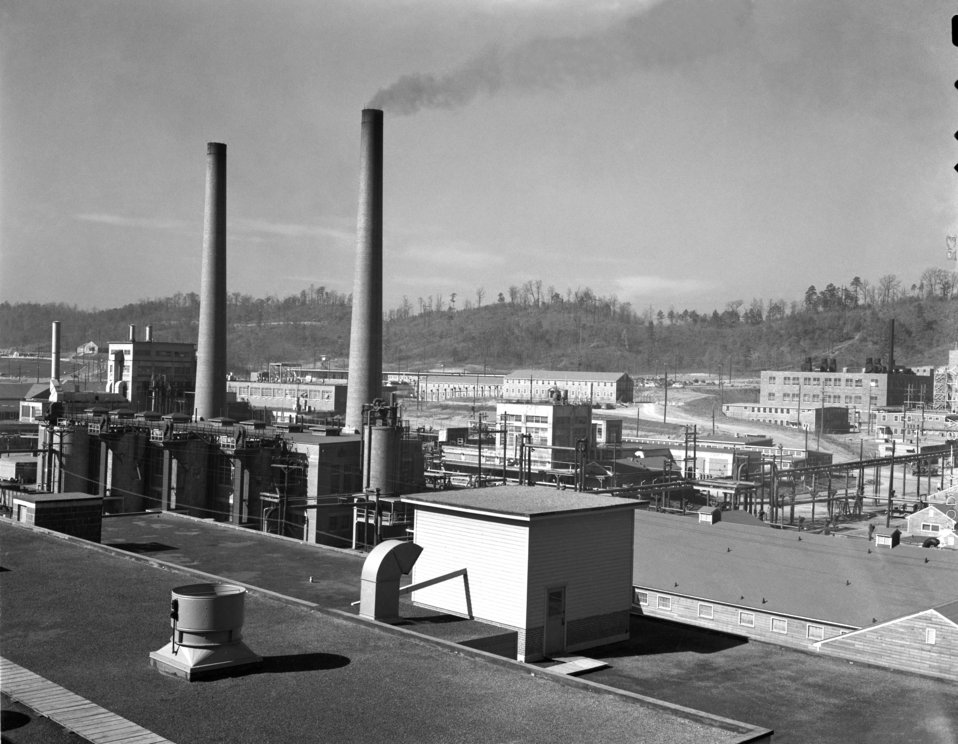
Y-12 Tennessee Eastman Plant Oak Ridge 1946

3283-6cc DOE photo Ed Westcott 1946 Oak Ridge Tennessee